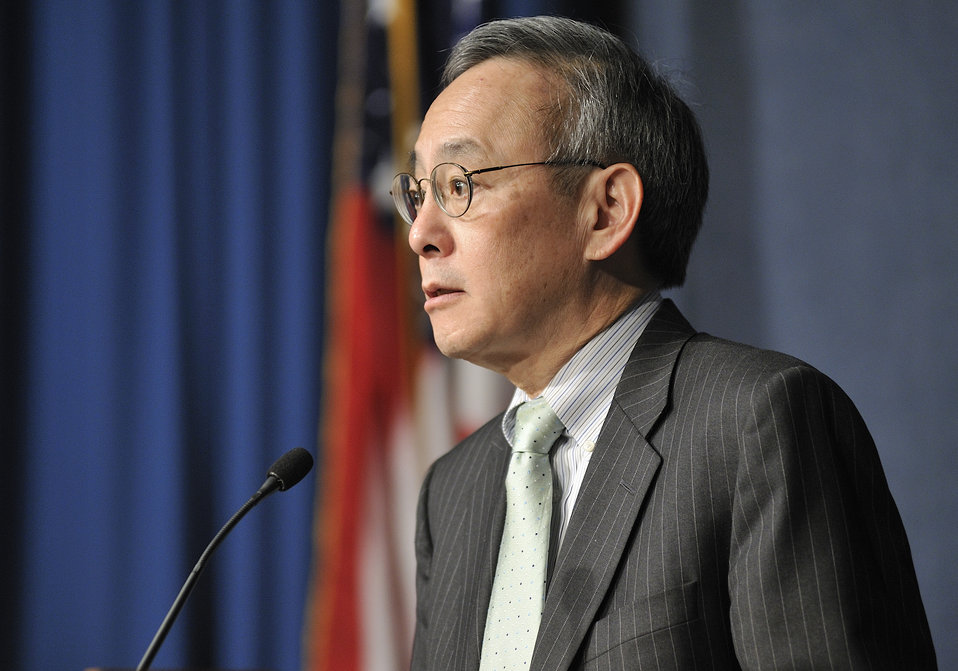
Martin Luther King Jr. Day Celebration at DOE headquarters.